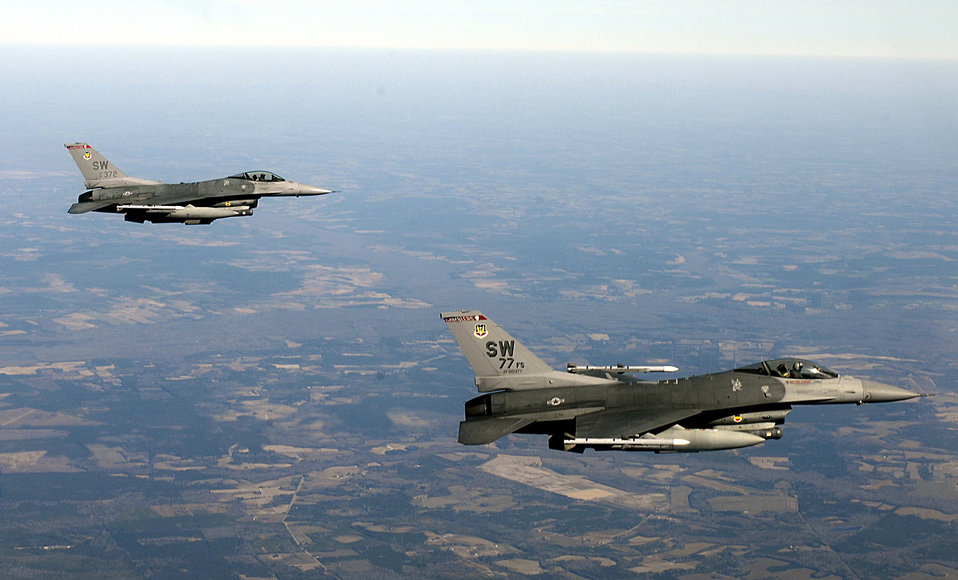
Exercise Iron Thunder

77th Fighter Squadron F-16 Fighting Falcons look for simulated targets and hostile aircraft near Shaw Air Force Base, S.C. Feb. 7 during Exercise Iron Thunder, a multi-service, multi-national large force exercise with more than 100 aircraft participating.